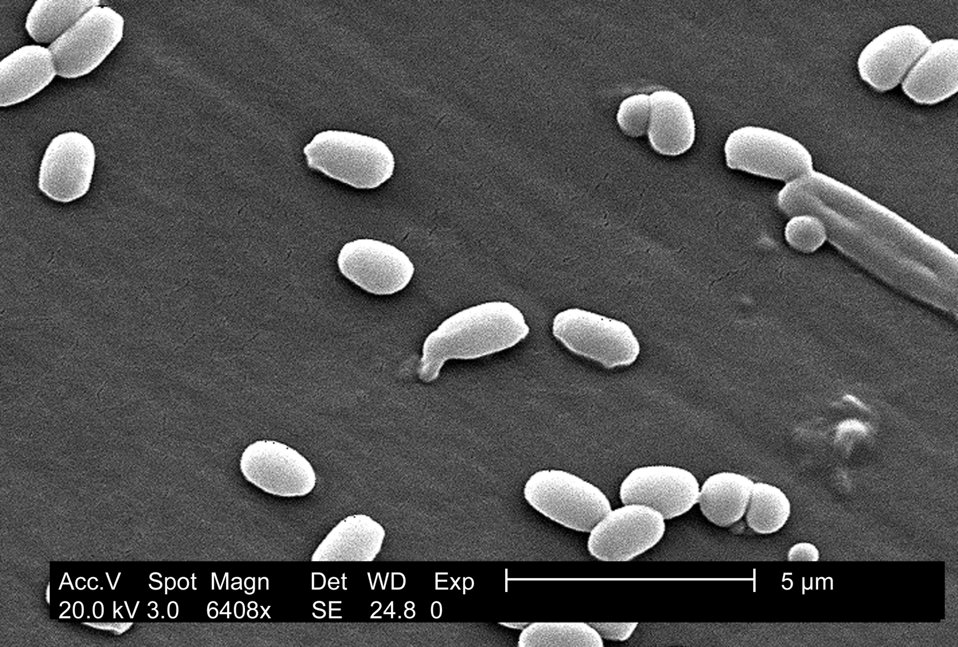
Under a magnification of 6,408X, this scanning electron micrograph (SEM) depicted spores from the Aimes strain of Bacillus anthracis bacteria. See PHIL 10124 for a colorized version of this image.